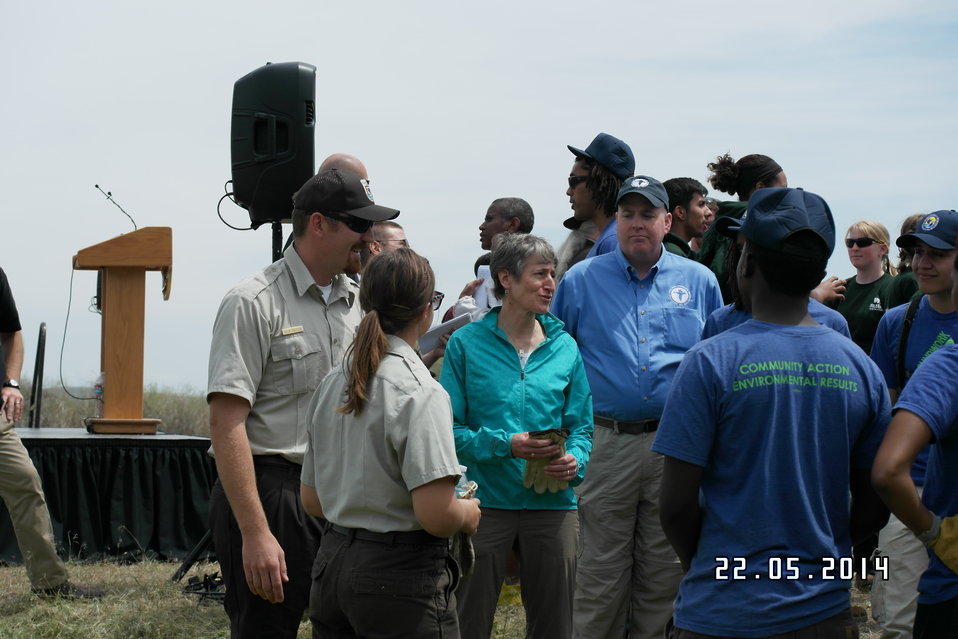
Secretary Jewell Announces $6.7 for Youth Conservation Job

Interior Secretary Sally Jewell helps local youth conservation groups plant cottonwood trees at Rocky Mountain Arsenal National Wildlife Refuge.